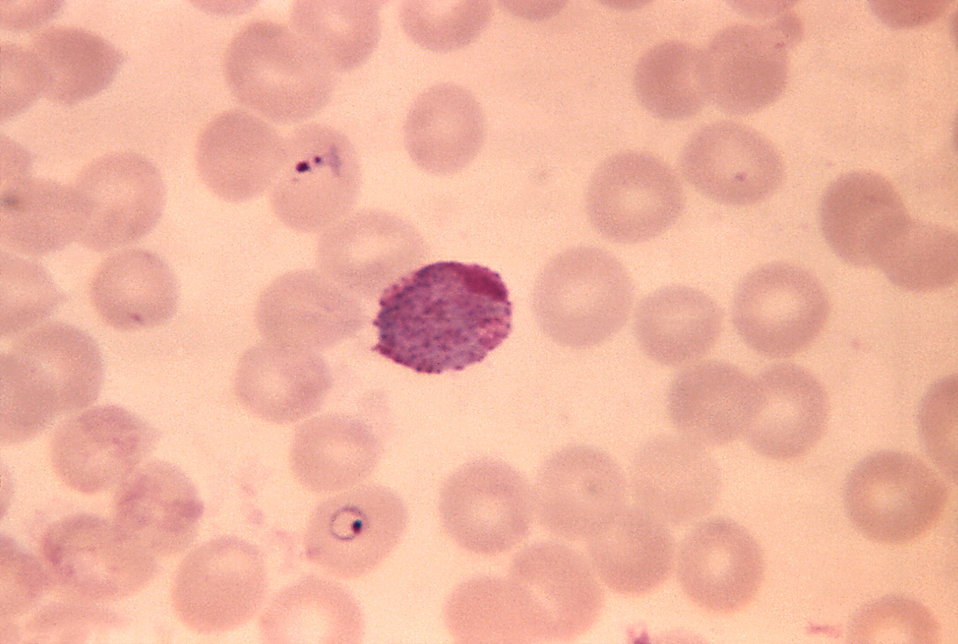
This blood smear photomicrograph depicts a Plasmodium vivax macrogametocyte; Mag. 1250X.